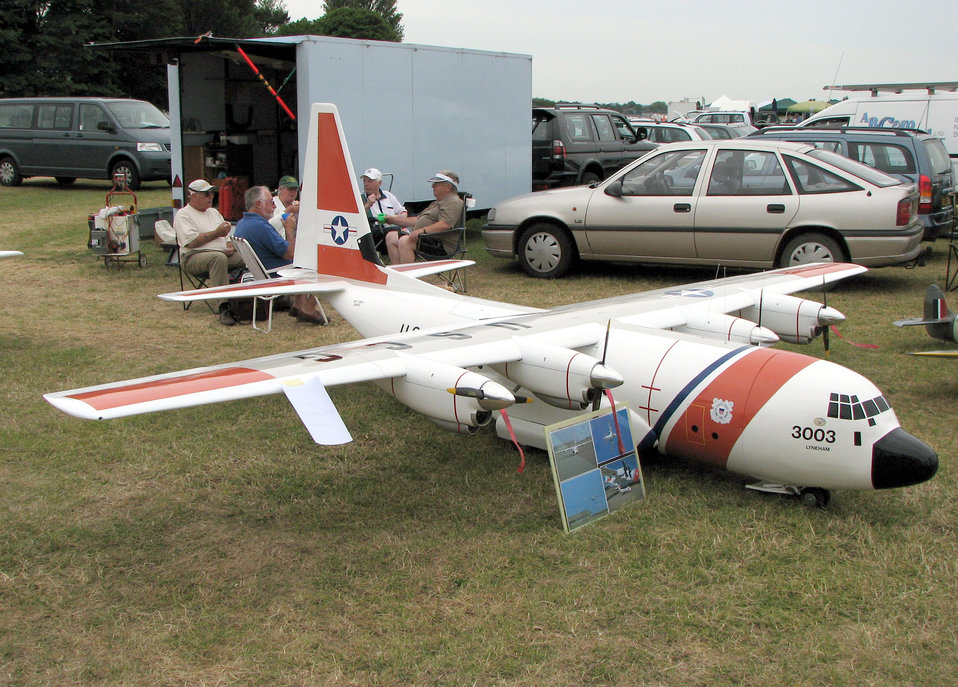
C-130j.hercules.model.arp